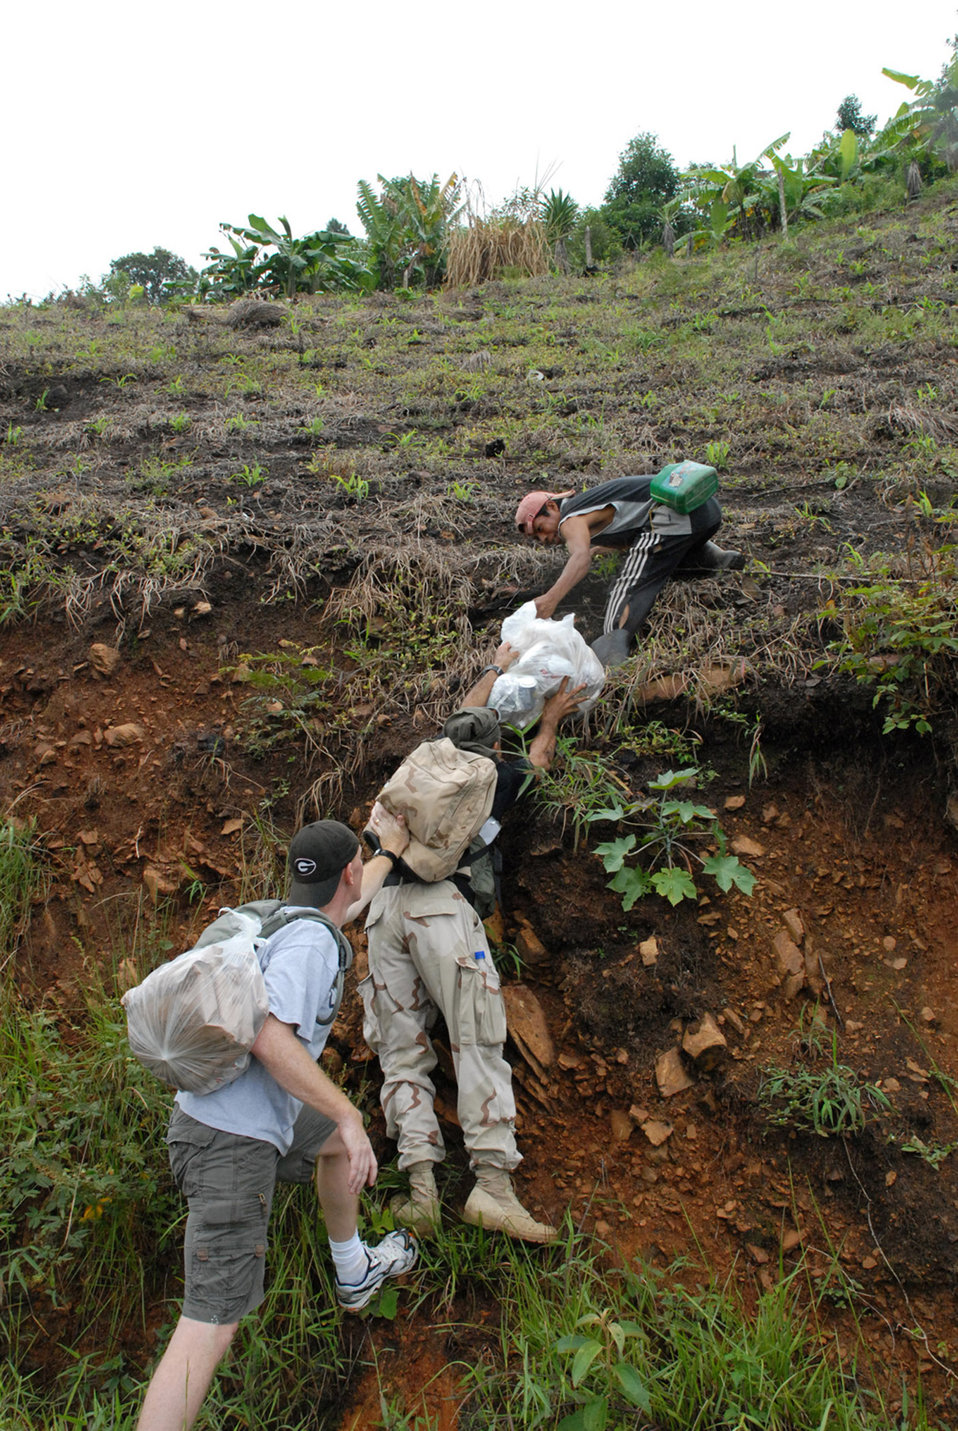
Servicemembers deliver food to Honduran mountain village

Chaplain (Capt.) Chad Bellamy supports Herberth Gaekel as he stretches to hand food to a Honduran Oct. 20 in Bella Vista, Honduras. Mr. Gaekel, from the Joint Task Force Bravo fire department, helped the JTF-Bravo chaplain plan the hike to deliver food to people in the village of Bella Vista. Approximately 50 servicemembers from Soto Cano Air Base, Honduras, participated in the hike.